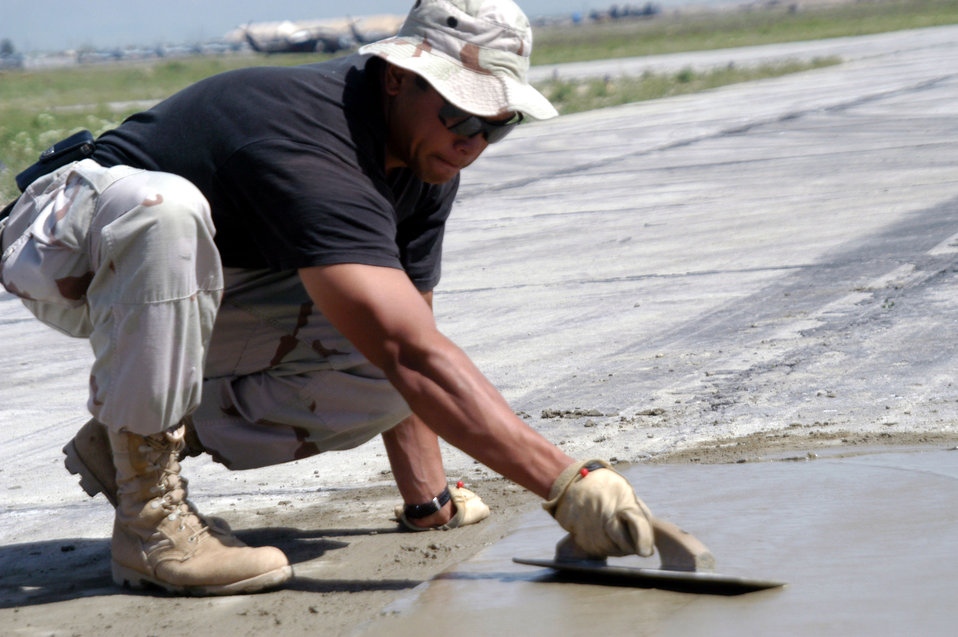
Smooth operator

OPERATION ENDURING FREEDOM (AFPN) -- Staff Sgt. Stephen Deen smoothes concrete on the active runway at Bagram Air Base, Afghanistan, as part of a $2.3 million airfield repair project. Deen is a pavements and equipment operator with the 455th Expeditionary Operations Group civil engineer element. He is deployed from the 30th Civil Engineer Squadron at Vandenberg Air Force Base, Calif.